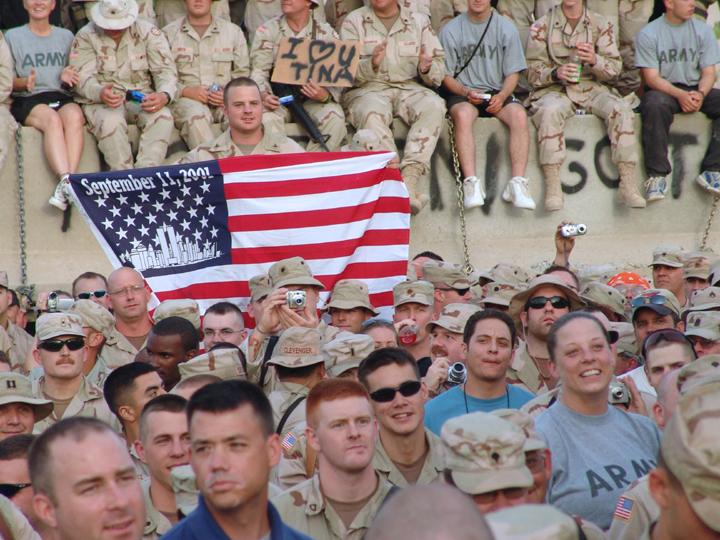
USO brings taste of America to troops

BAGHDAD, Iraq -- Soldiers, Sailors, Airmen and Marines take a respite from deployed life to enjoy a concert put on by country music star Toby Keith on May 17.